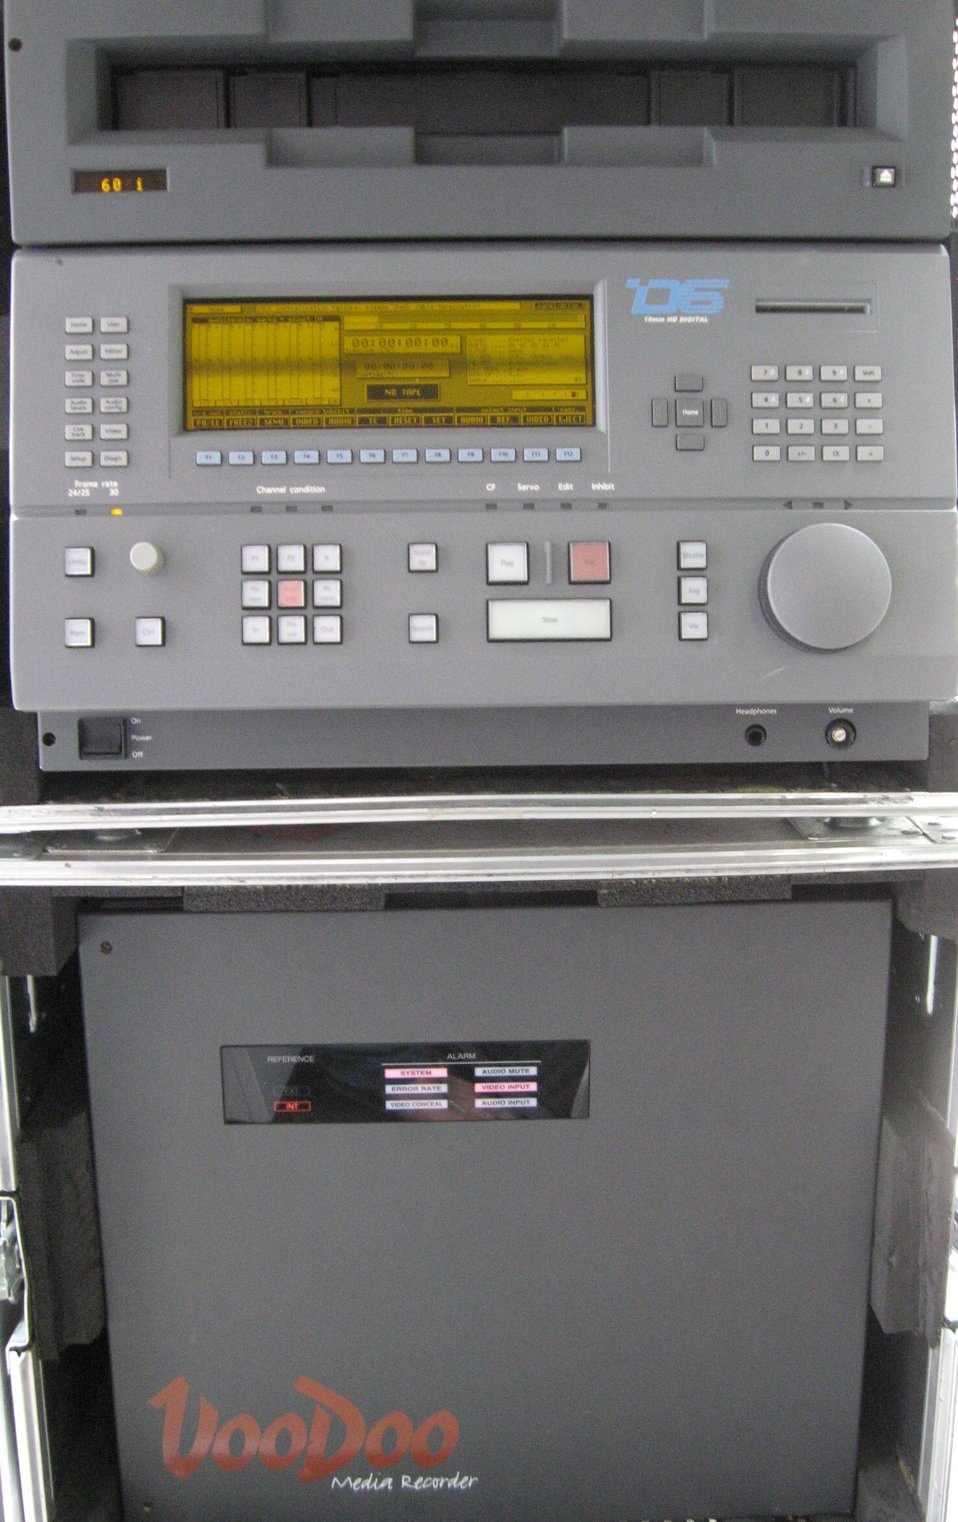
D6 VTR full unit.